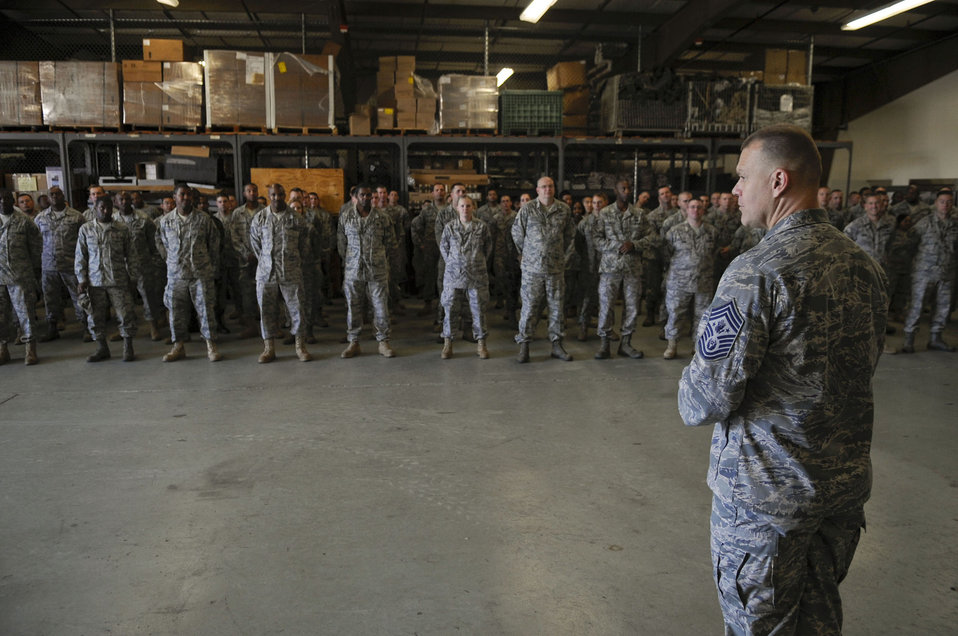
Top enlisted Airman visits Andrews Airmen

Chief Master Sgt. of the Air Force James A. Roy speaks with members of the 316th Civil Engineer Squadron Oct. 7, 2009, at Joint Base Andrews Naval Air Facility Washington. Chief Roy used his background as a heavy equipment operator to relate to the squadron and help give them insight into the recent increase in CE deployments and special taskings. Chief Roy also stressed the importance of spouses and family members and their role in keeping a healthy and effective Air Force.